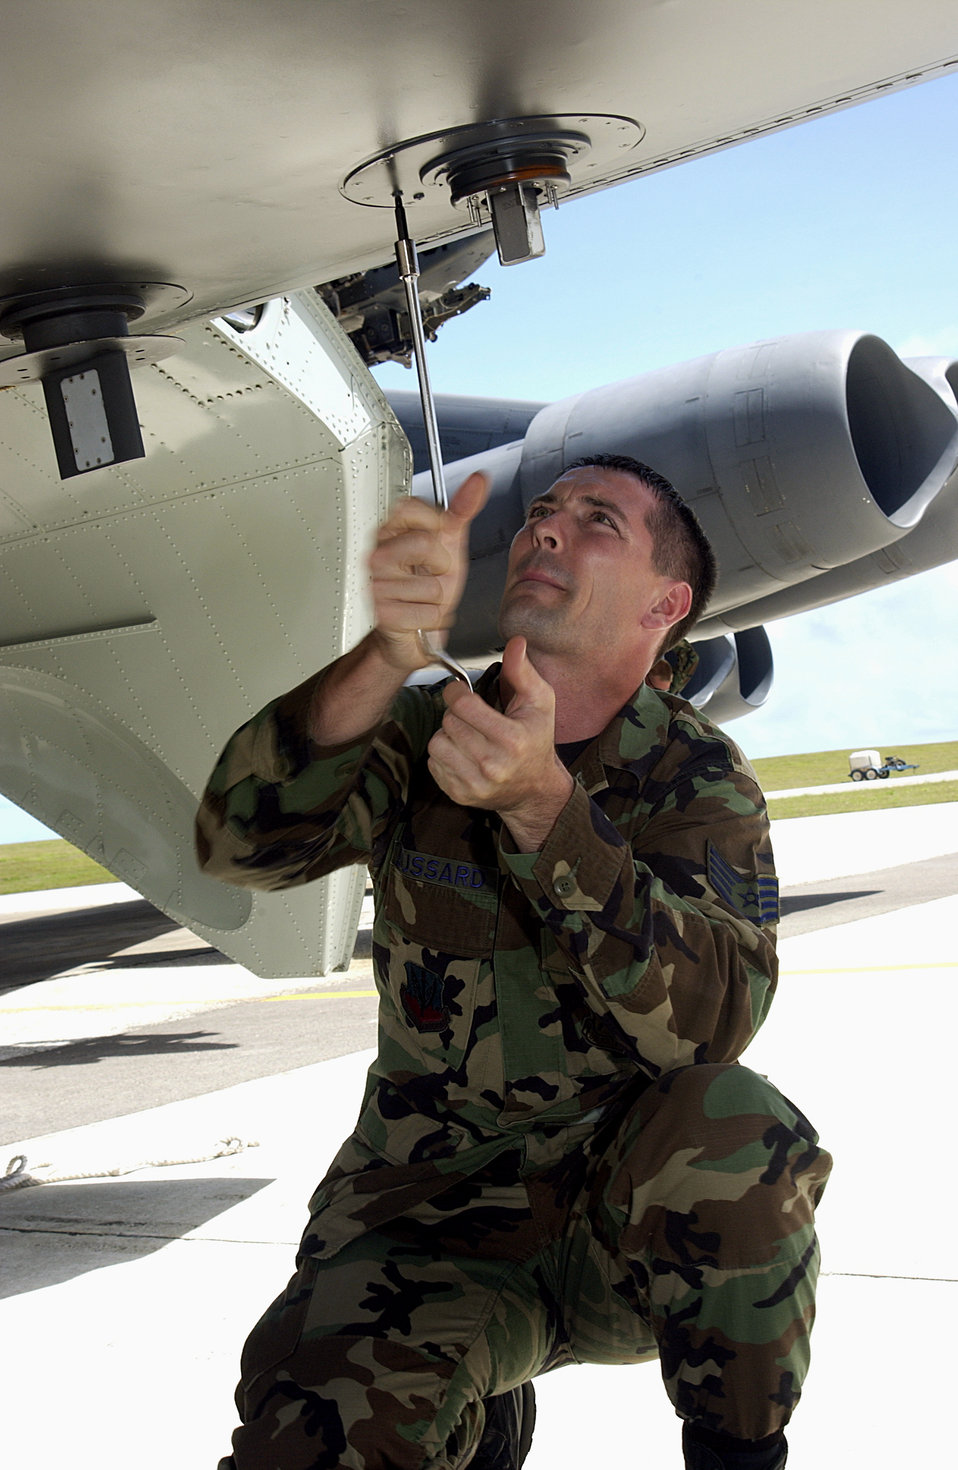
Bussard

ANDERSEN AIR FORCE BASE, Guam -- Staff Sgt. Derek Bussard, an electronic counter-measures specialist, works on a B-52 Stratofortress March 19. B-52s and support troops from the 2nd Bomb Wing at Barksdale Air Force Base, La., are deployed as part of the 7th Air Expeditionary Wing.